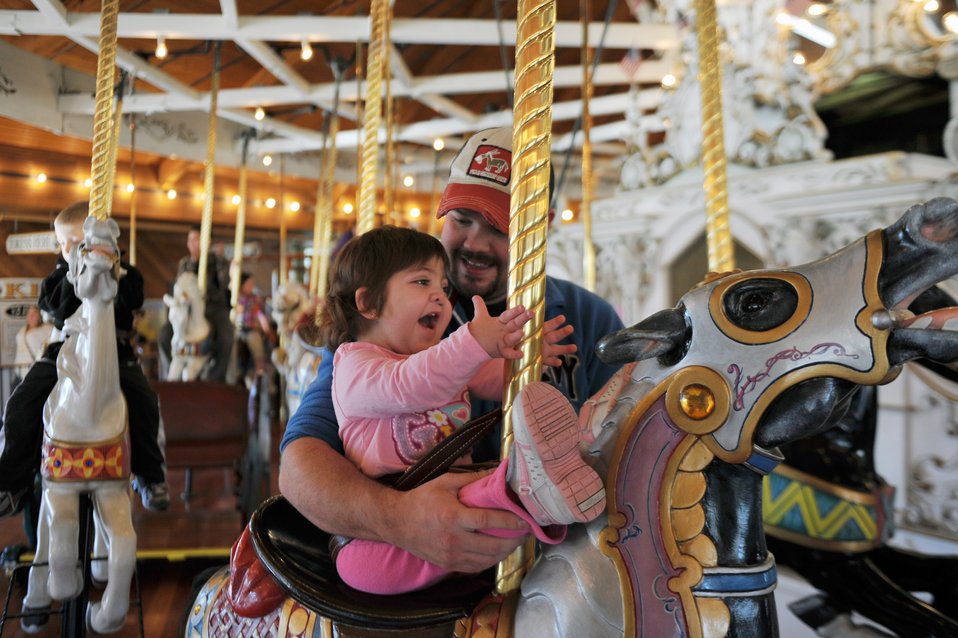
Exceptional Family Member Program

Matt Whitford holds his daughter, Braelyn Whitford, as she gets excited as the Looff Carrousel starts to operate in Spokane, Wash., on Apr. 9, 2011. Braelyn is diagnosed with Kabuki Syndrome. Braelyn and her family are assisted through the Exceptional Family Member Program which connects active duty family members who have special needs with many helping agencies both on- and off- base.